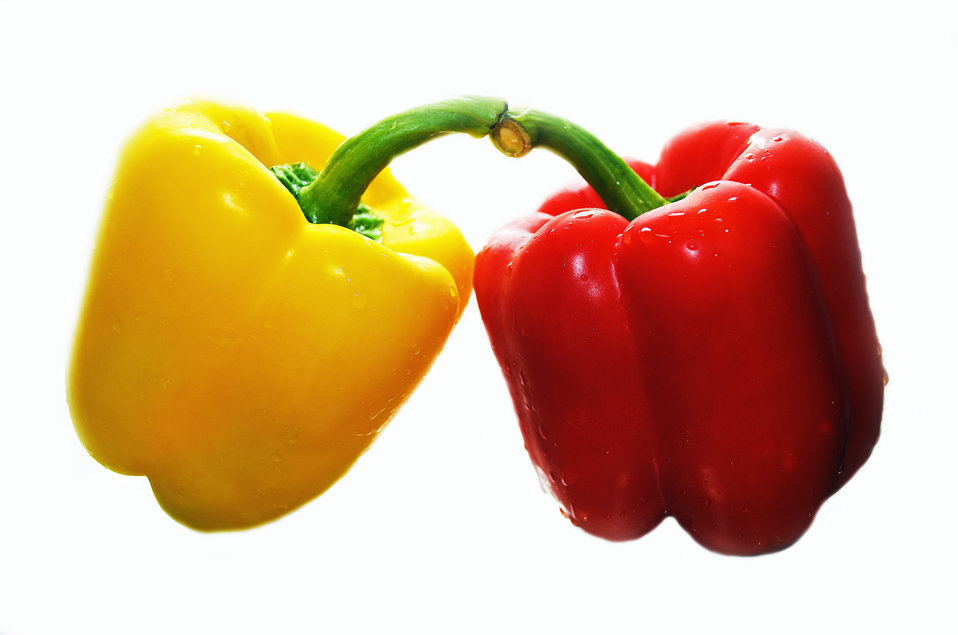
Fresh sweet pepper.